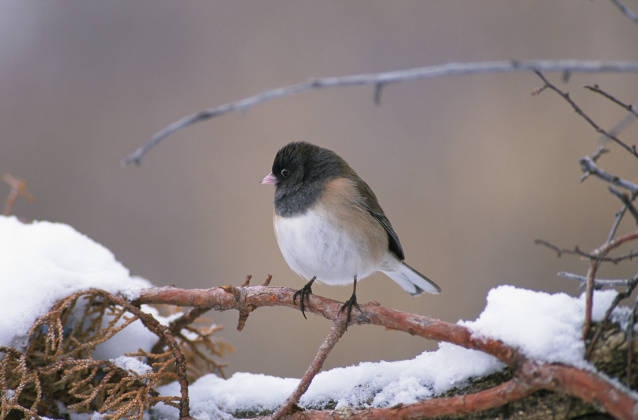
dark-eyed junco